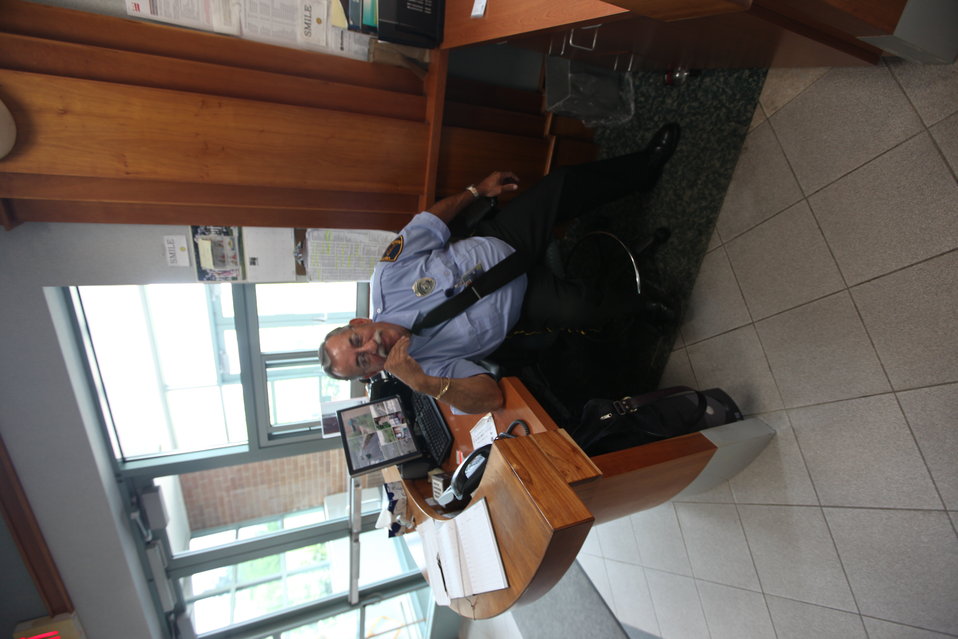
Northeast Region Employee Appreciation Awards